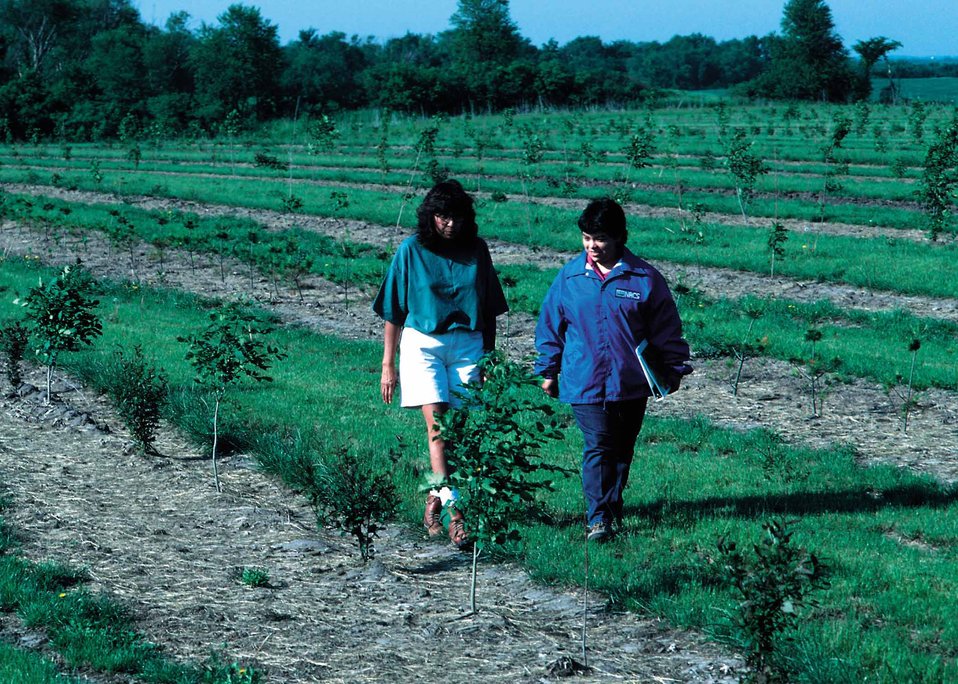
NRCS assists a landowner on a Conservation Reserve Program tree planting in Muscatine County.